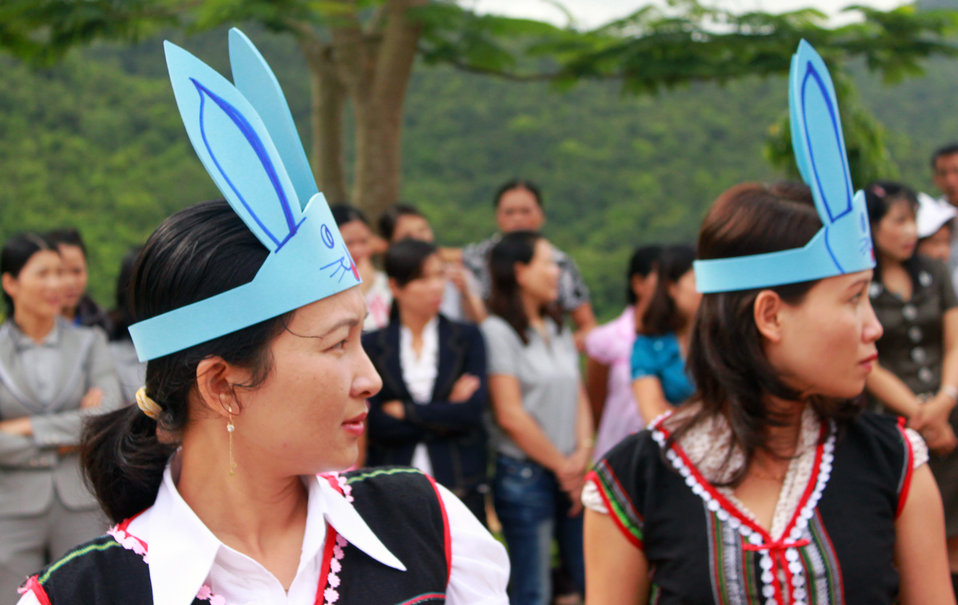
Teachers in Kon Tum practice what they learned from USAID-funded intensive training courses